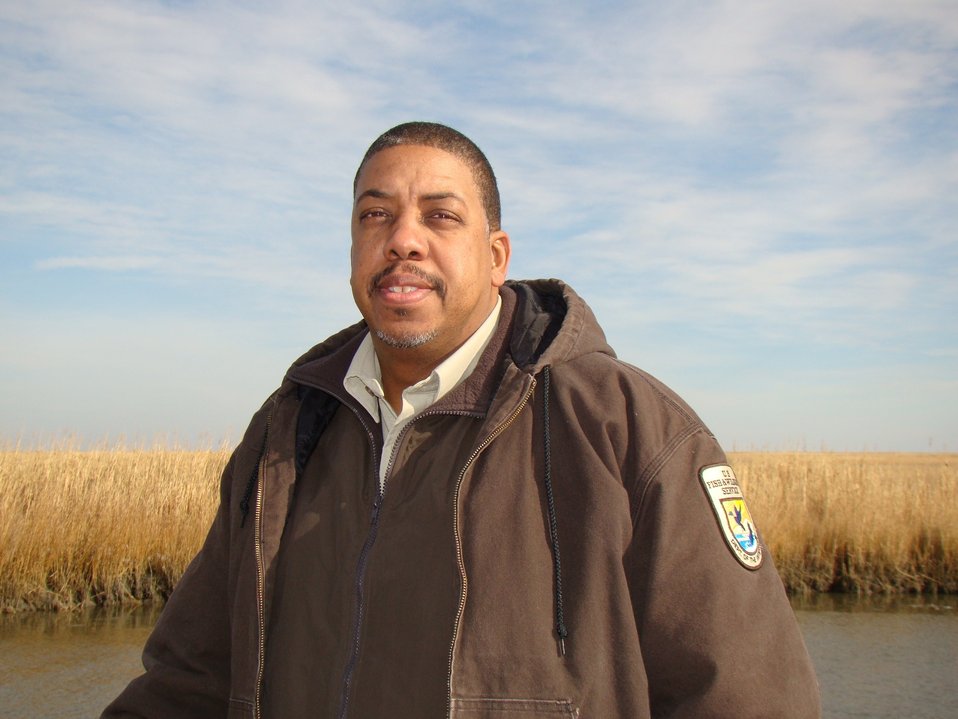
Oscar Reed, deputy refuge manager at Bombay Hook National Wildlife Refuge in Delaware, photographed along the refuge's Boardwalk Trail. (USFWS)